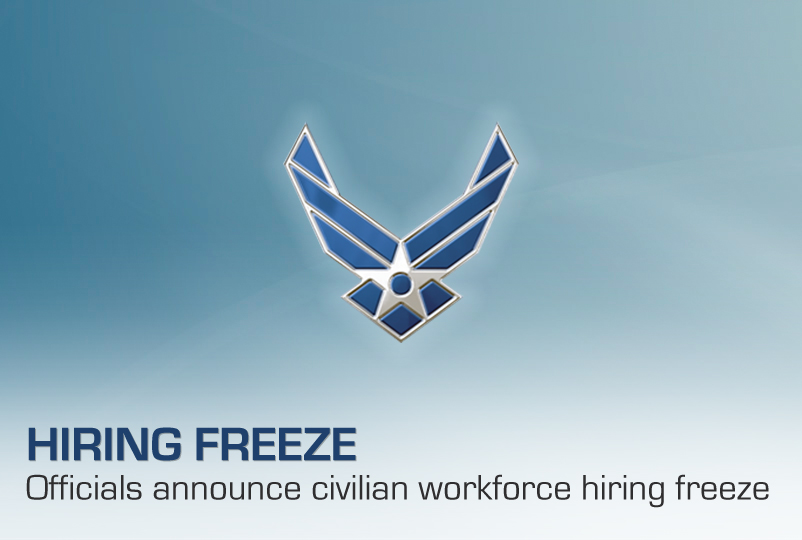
Hiring freeze